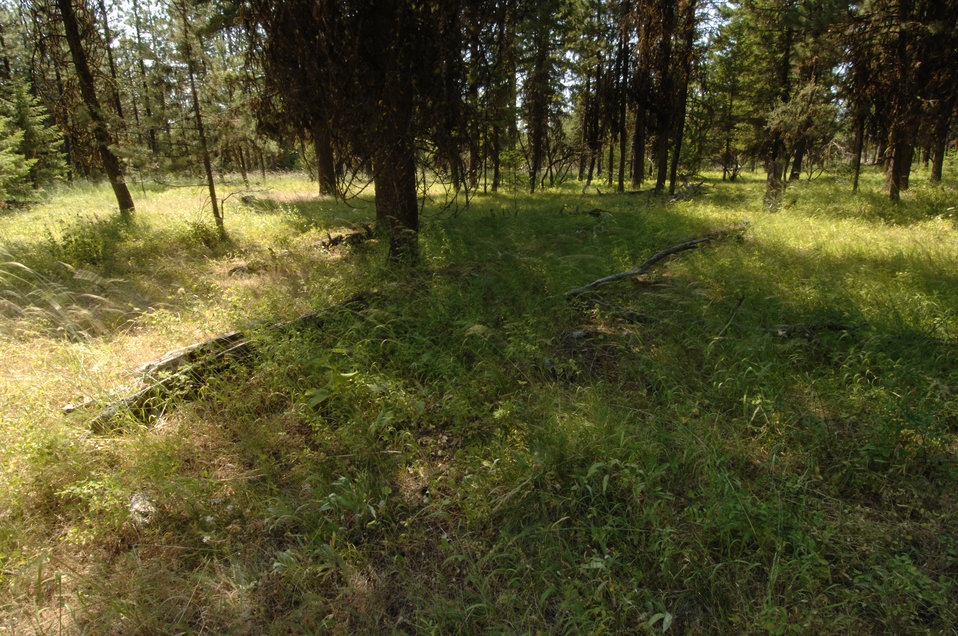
The U.S. Department of Agriculture (USDA) Forest Service (FS) is strongly committed to the management of the National Forests in an environmentally sound manner. The agency's top priority is to maintain and improve the health, diversity, and productivity of forest ecosystems for the enjoyment of current and future generations. Forest management includes guidance, administration, and support of the agency's forest products management and sales programs. Forest products include materials derived from a forest for commercial use such as lumber and paper, and also 'special forest products' such as medicinal herbs, fungi, edible fruits and nuts, and other natural products. This photo was taken at the Umatilla National Forest in Oregon on July 10, 2007.